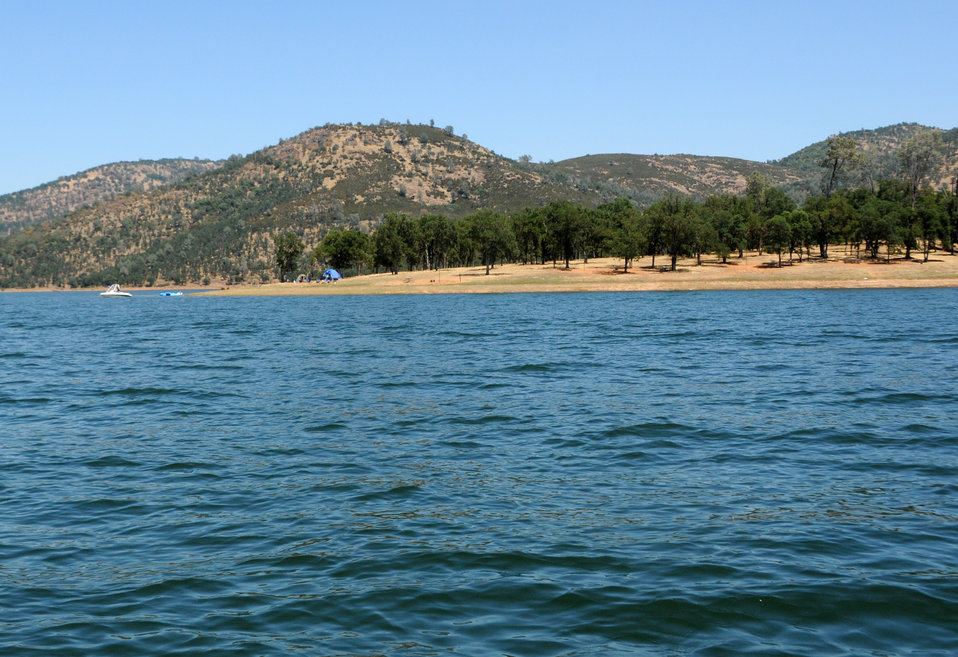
New Hogan Lake and Dam, Calaveras County, Calif.

A view of New Hogan Lake near Valley Springs, Calif., July 8. The 4,400 surface acre lake is located in the oak and brush-covered foothills of the Sierra Nevada Mountains and was created in 1964 with the completion of New Hogan Dam.

When full, the lake has 50 miles of shoreline and extends nearly eight miles upstream to the confluence of the north and south forks of the Calaveras River. The lake includes several campsites, boat ramps and other recreational activities open to the public.